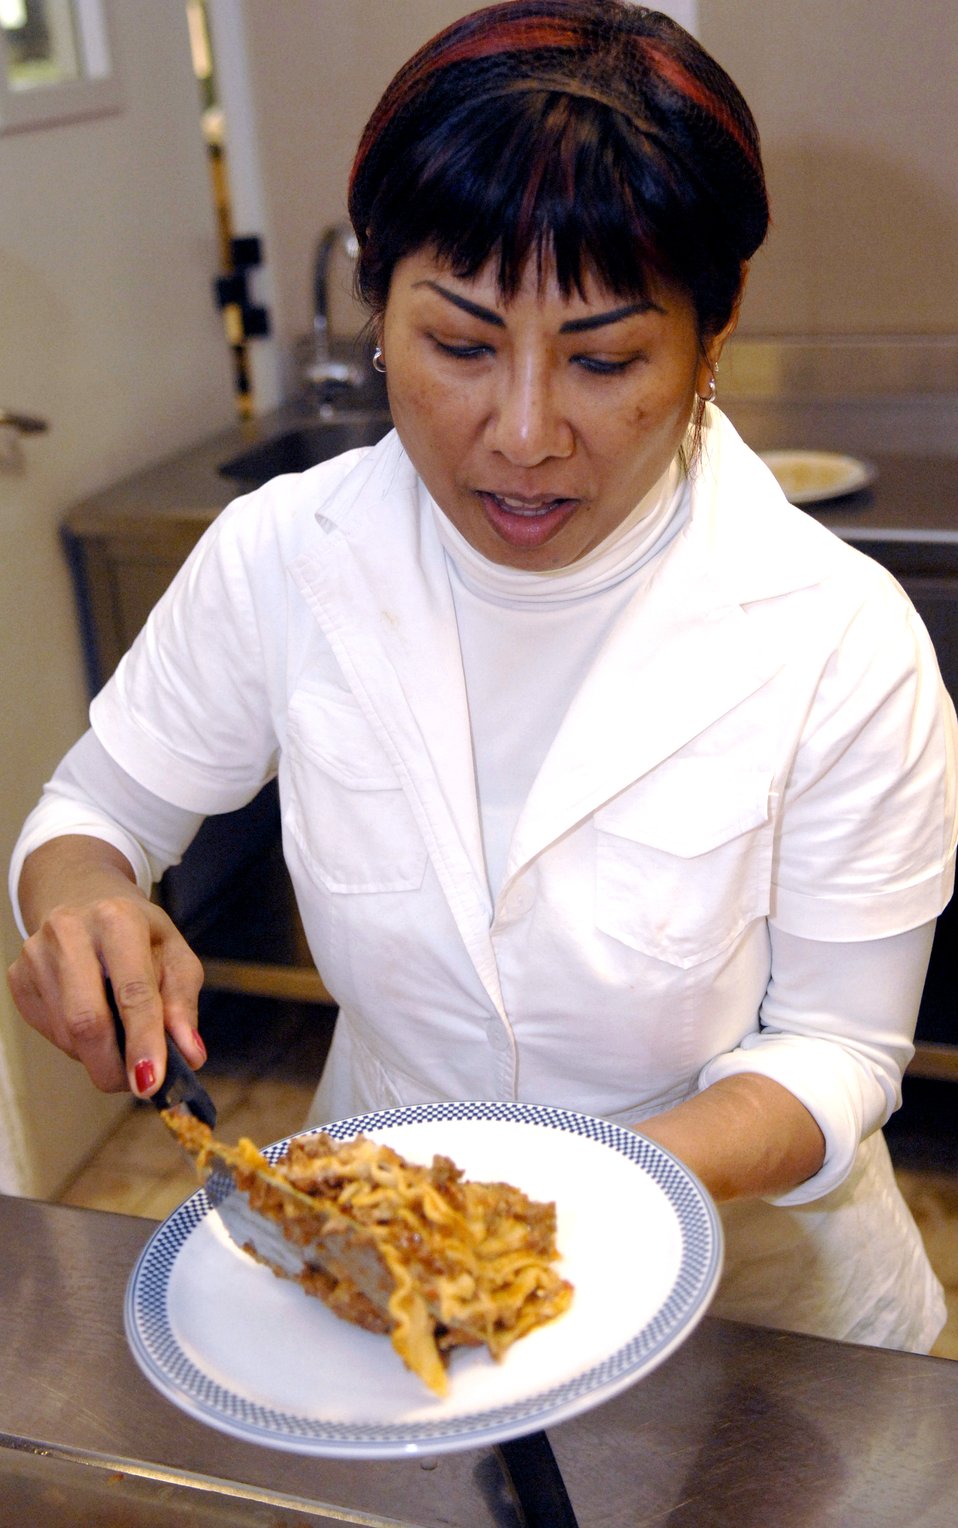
Serving Airmen

Thananon Srichompoo serves lunch at the La Dolce Vita Dining Facility Jan. 19 at Aviano Air Base, Italy. Base members at Aviano AB maintain two F-16 fighter squadrons to conduct regional and expeditionary operations under NATO, Supreme Allied Command Europe, or national tasking.